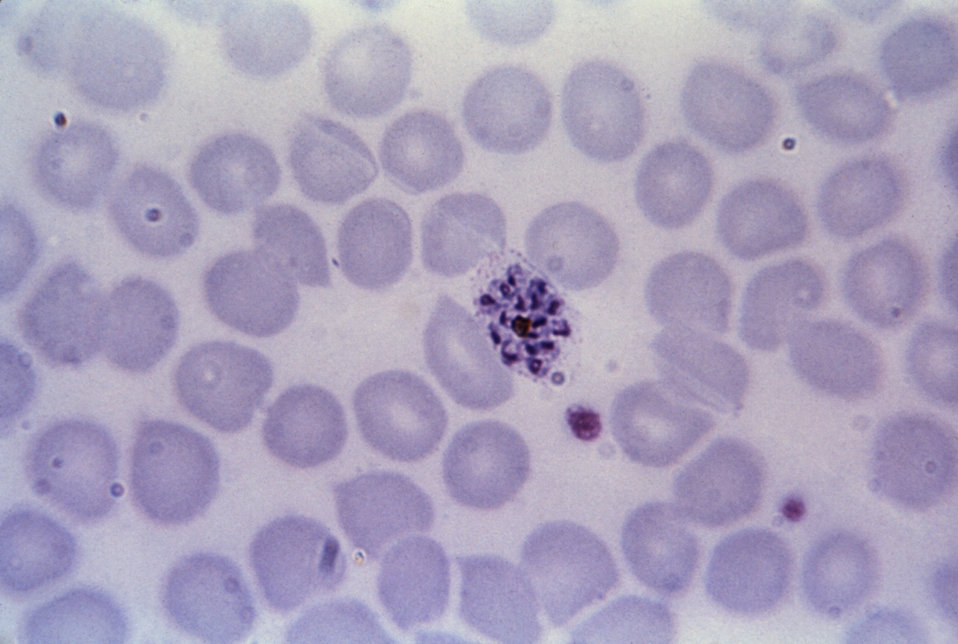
This thin film Giemsa stained micrograph depicts a mature Plasmodium vivax schizont containing 14 merozoites.